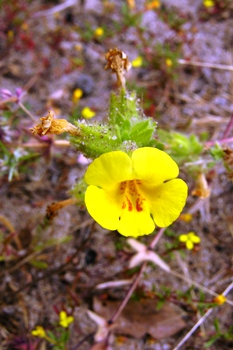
Vandenberg monkeyflower (Diplacus vandenbergensis) is a small annual herb of the Phrymaceae (lopseed) family. It grows from 0.5 to 10 inches tall and produces one to several yellow flowers on purple-tinted stems. It is only known to occur at nine locations on Burton Mesa, a distinct geographic region located in western Santa Barbara County, California.